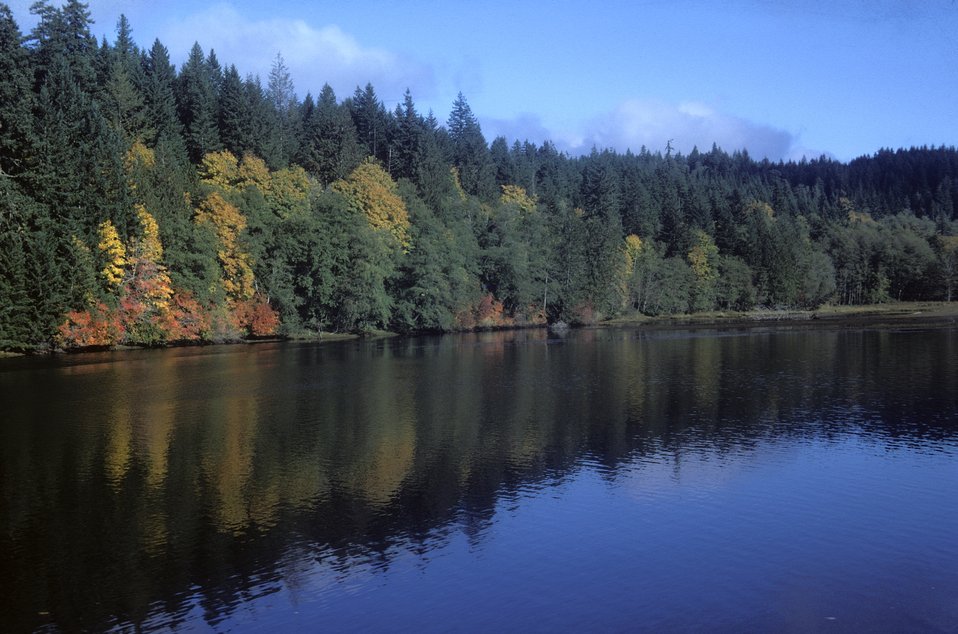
Tidal inlet in fall